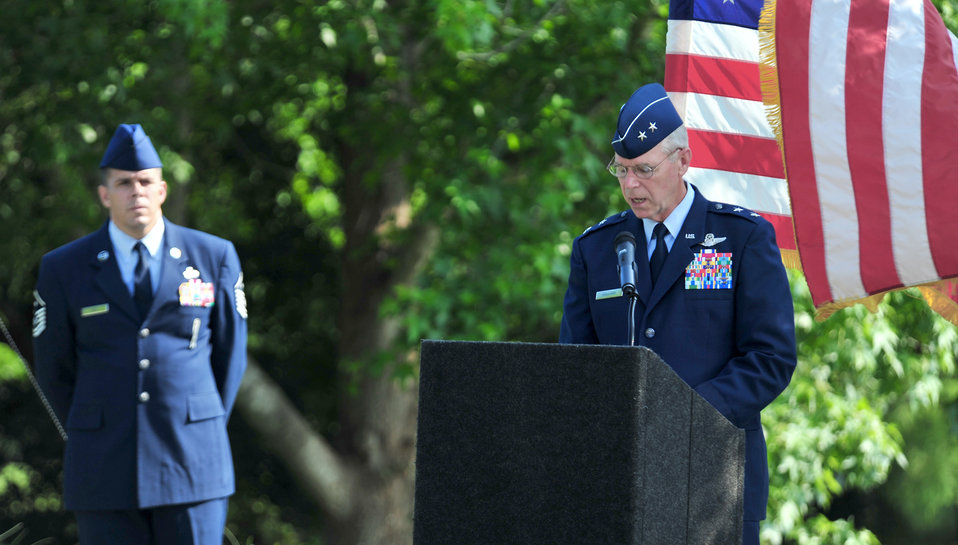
Fallen Airmen Memorial

Maj. Gen. William L. Holland addresses the crowd at the dedication ceremony for the Fallen Airmen Memorial June 2, 2010, at Memorial Lake, S.C. The Fallen Airmen Memorial is dedicated to all Airmen who have died in combat. General Holland is the commander of the 9th Air Force.